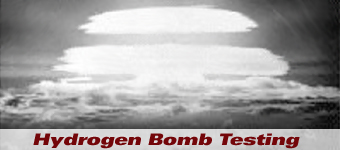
First Airborne Hydrogen Bomb

Hydrogen bomb testing history spotlight graphic .